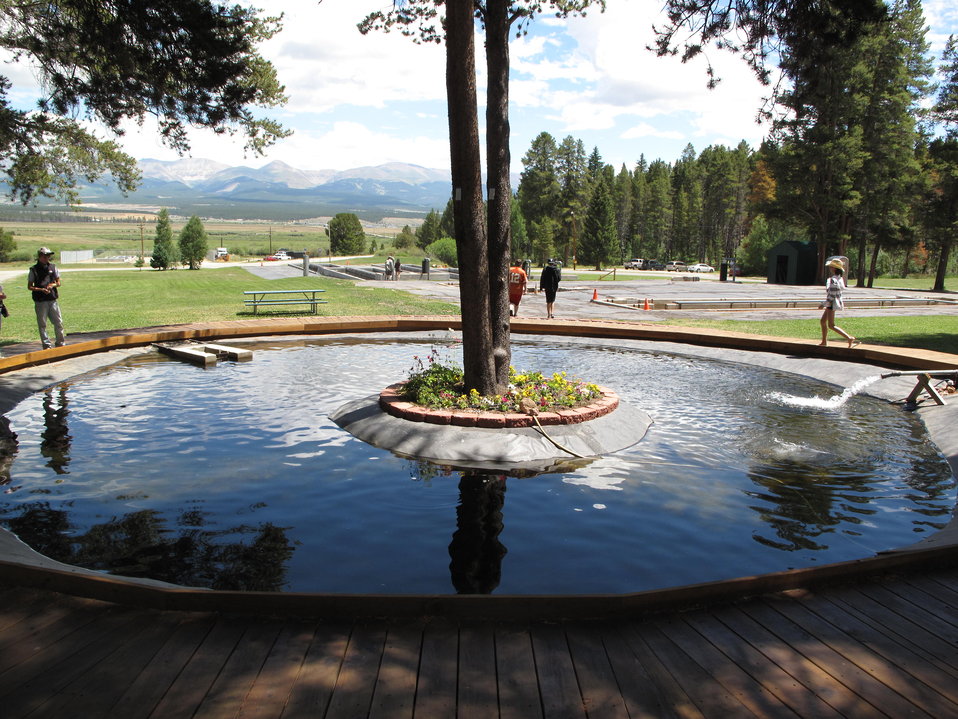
Display Pond

The display pond is located in front of the visitor center, and is a great place to feed the fish.